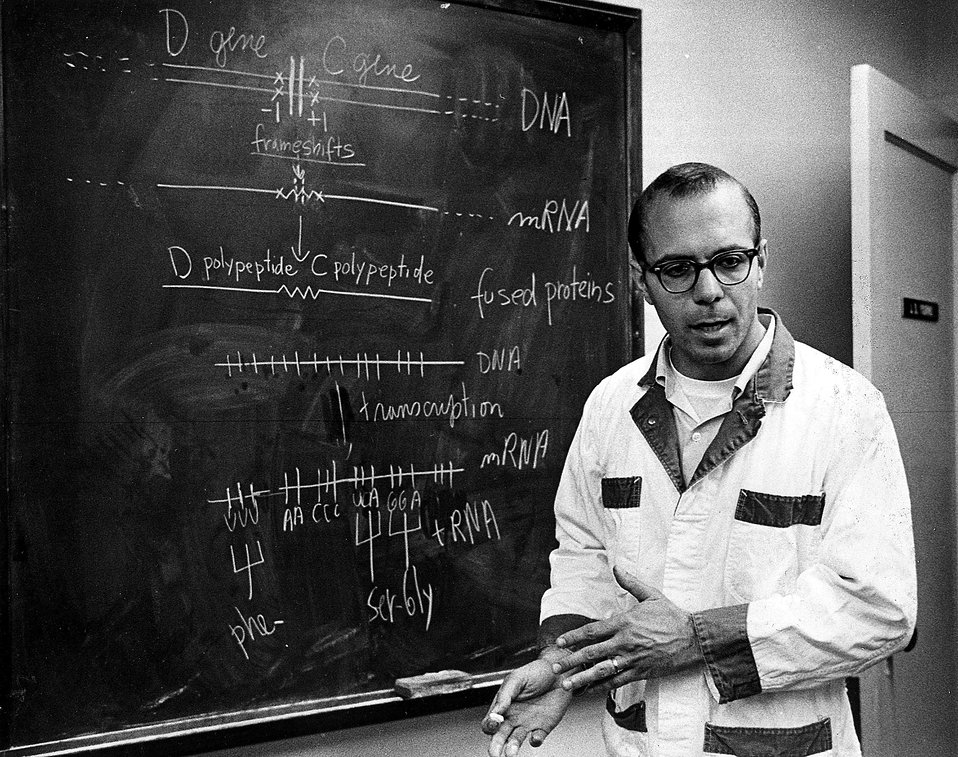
Existence of four letter words in the genetic code that controls the makeup and amount of all proteins, ultimately affecting the cell's ability to divide, was first demonstrated conclusively by Dr. Yourno and his colleagues.
c.1973